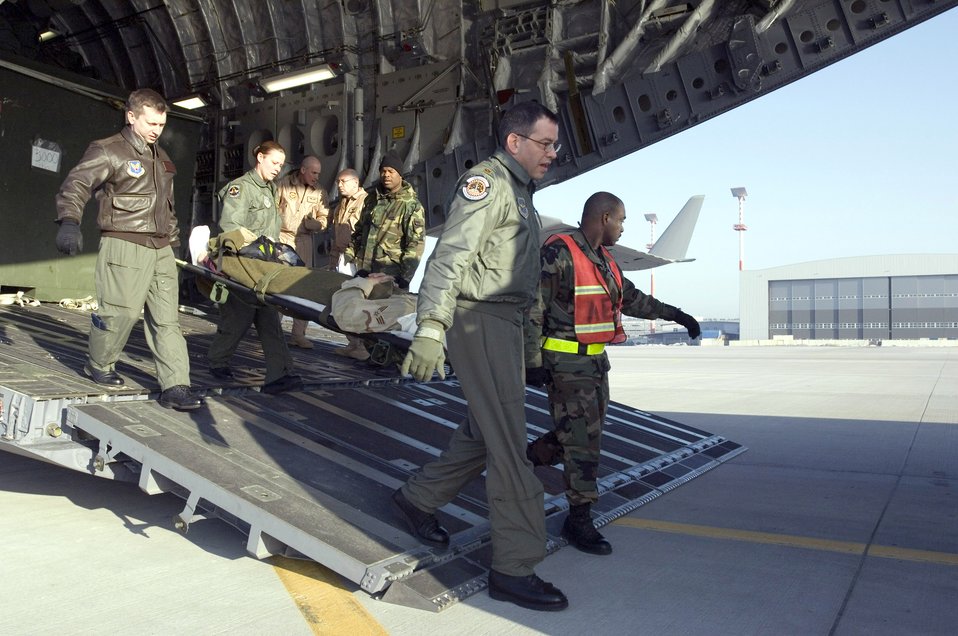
C-17 surpasses its 1 millionth flying hour

Maj. Mark McDaniel, Tech. Sgt. Misti Adams, Maj. Dale Grey and Staff Sgt. Dwayne Gulley, left to right, carry a litter from a C-17 Globemaster III at Ramstein Air Base, Germany, on Monday, March 20, 2006. The Mississippi Air National Guard transport flew to Iraq to deliver cargo and returned as an aeromedical evacuation flight. On the return, it surpassed the transport fleet's 1 millionth hour of flight milestone. Majors McDaniel and Grey and Sergeant Gully are with Ramstein's 435th Aerospace Medical Squadron. Sergeant Adams is with the Ramstein's 791st Expeditionary Aeromedical Evacuation Squadron.